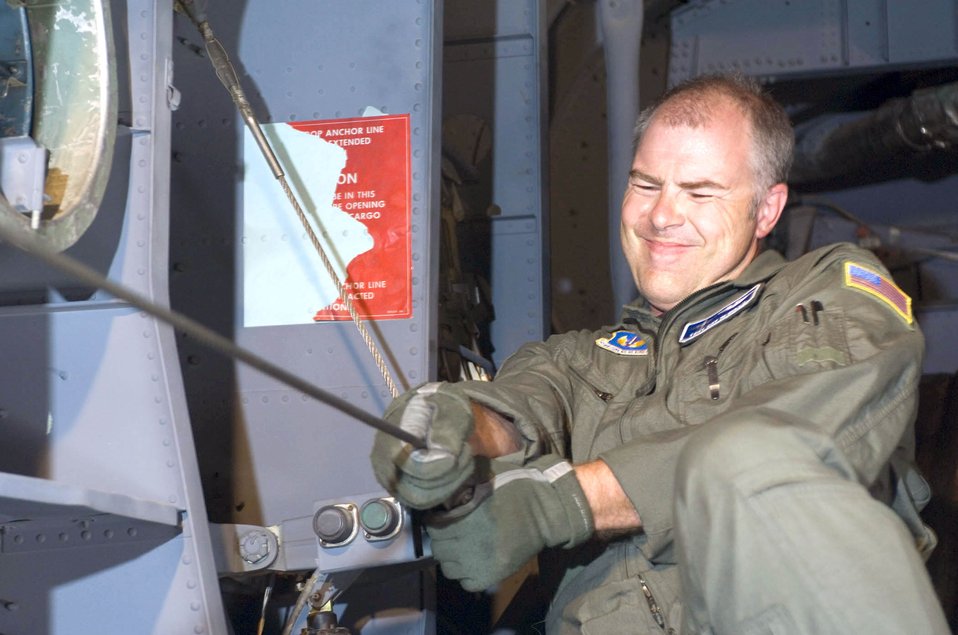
Hercules power

RAMSTEIN AIR BASE, Germany -- Tech. Sgt. Ray Hensley disconnects an anchor line in the rear of a C-130 Hercules. He is a loadmaster with the 37th Airlift Squadron.